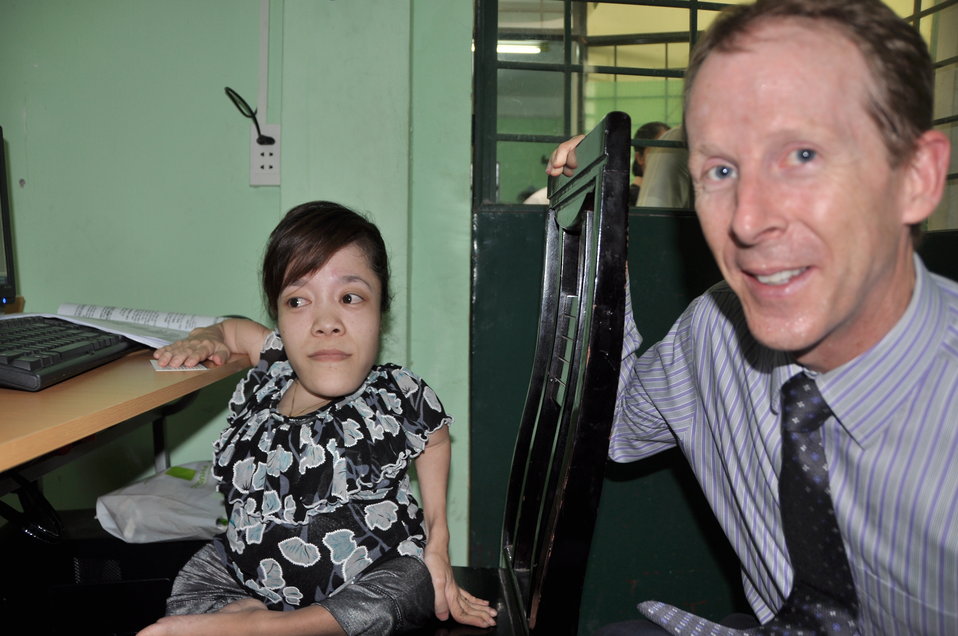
USAID Visits IT Training Program for People with Disabilities at Dong A University

Danang, Vietnam
July 17, 2013